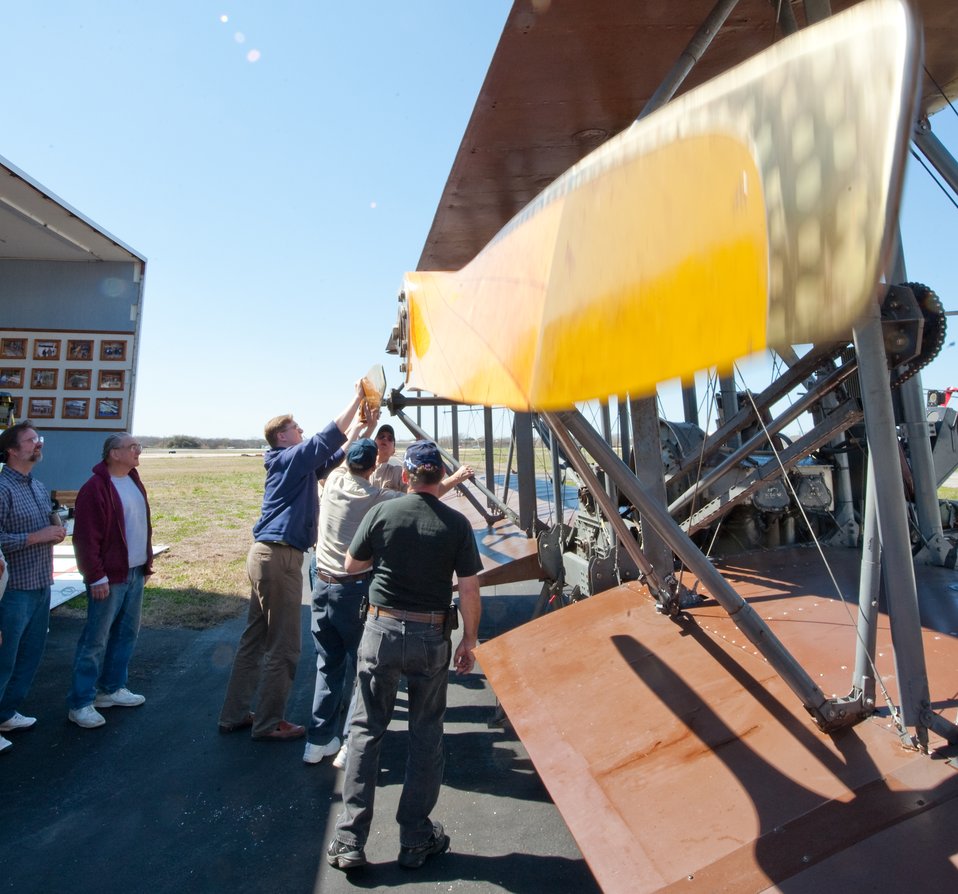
Wright

When the crew wiggles one propeller, the other one wiggles on the Wright